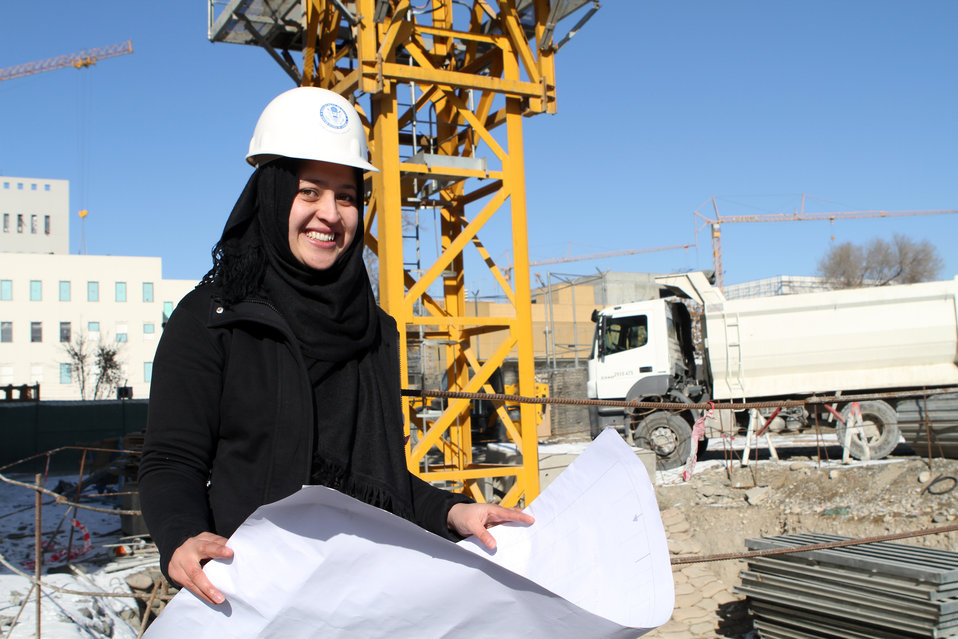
A recent graduate from USAID’s Female Engineering Internship program